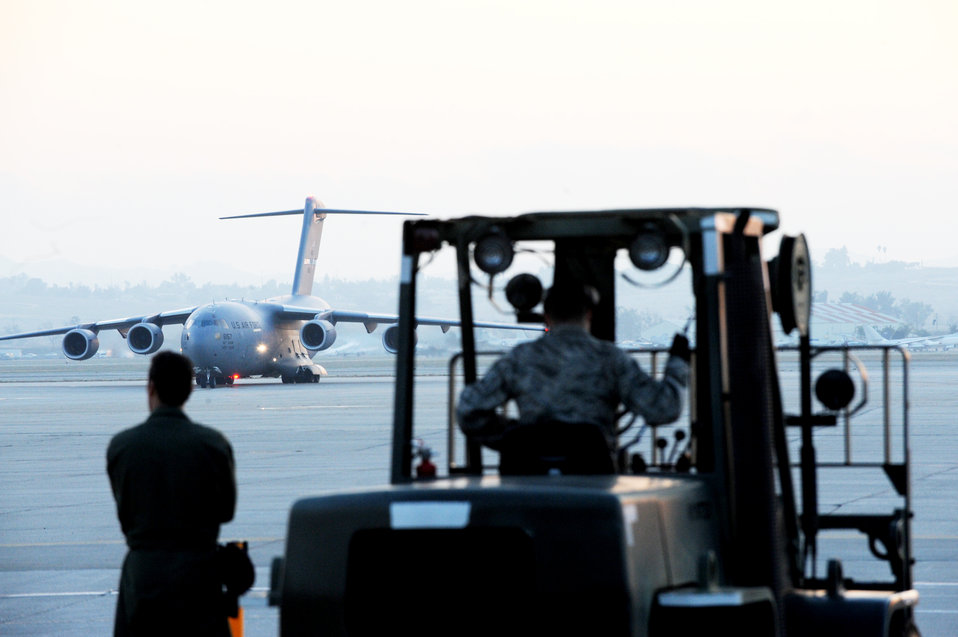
Airmen load C-17s for Haitian relief

Relief workers and search and rescue teams use March Air Reserve Base, Calif., as a staging area to assemble supplies, people and equipment Jan. 13, 2010, following the recent 7.0-magnitude earthquake in Haiti. All will be loaded on a C-17 Globemaster III and flown into Port-au-Prince, Haiti. The aircraft is assigned to the 60th Air Wing at Travis Air Force Base, Calif.,